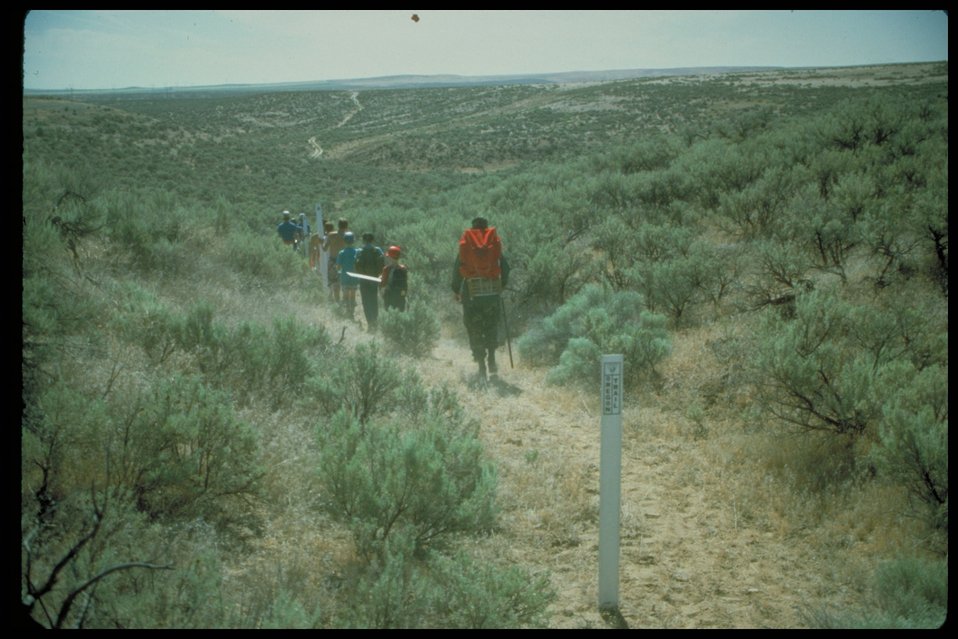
Boyscouts marking Oregon Trail Lower Snake River District